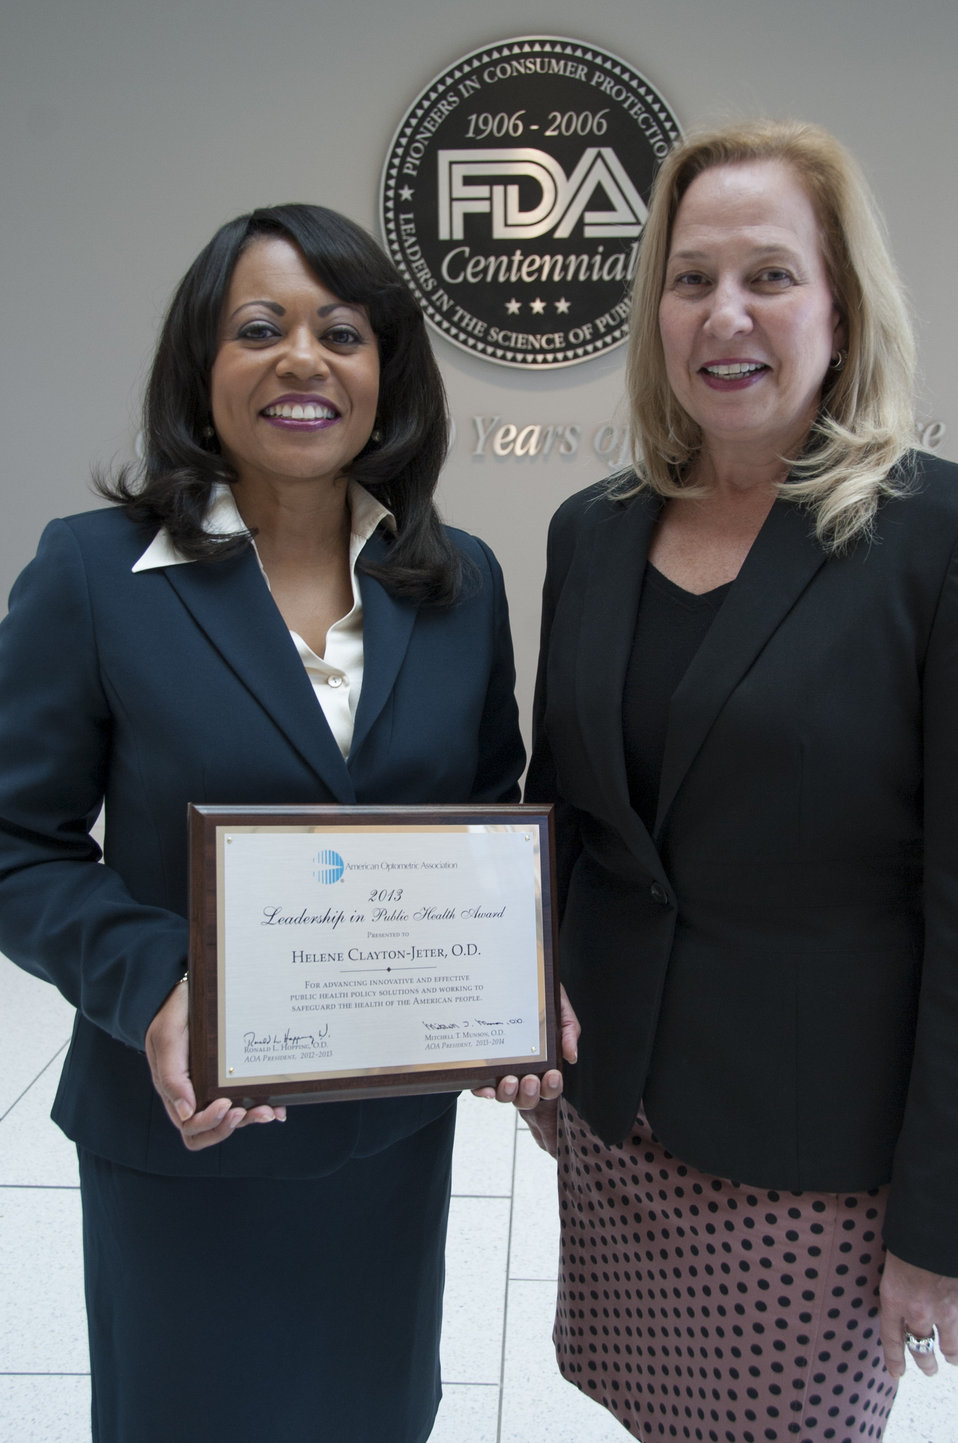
AOA Leadership Award - 9863

Nov. 18, 2013; Dr. Helene Clayton-Jeter (left) accepted The American Optometric Association (AOA) 2013 Leadership in Public Health Award for her hard work and success in advancing innovative and effective public health policy solutions, and for helping safeguard the health of the American people. She is shown here alongside her colleague Heidi Marchand, Assistant Commissioner of FDA's Office of Health and Constituent Affairs (OHCA).

For more information on Helene's award, read this FDA Voice blog post: blogs.fda.gov/fdavoice/index.php/2013/12/a-vision-worth-h...

This photo is free of all copyright restrictions and available for use and redistribution without permission. Credit to the U.S. Food and Drug Administration is appreciated but not required. Privacy and use information: www.flickr.com/people/fdaphotos/